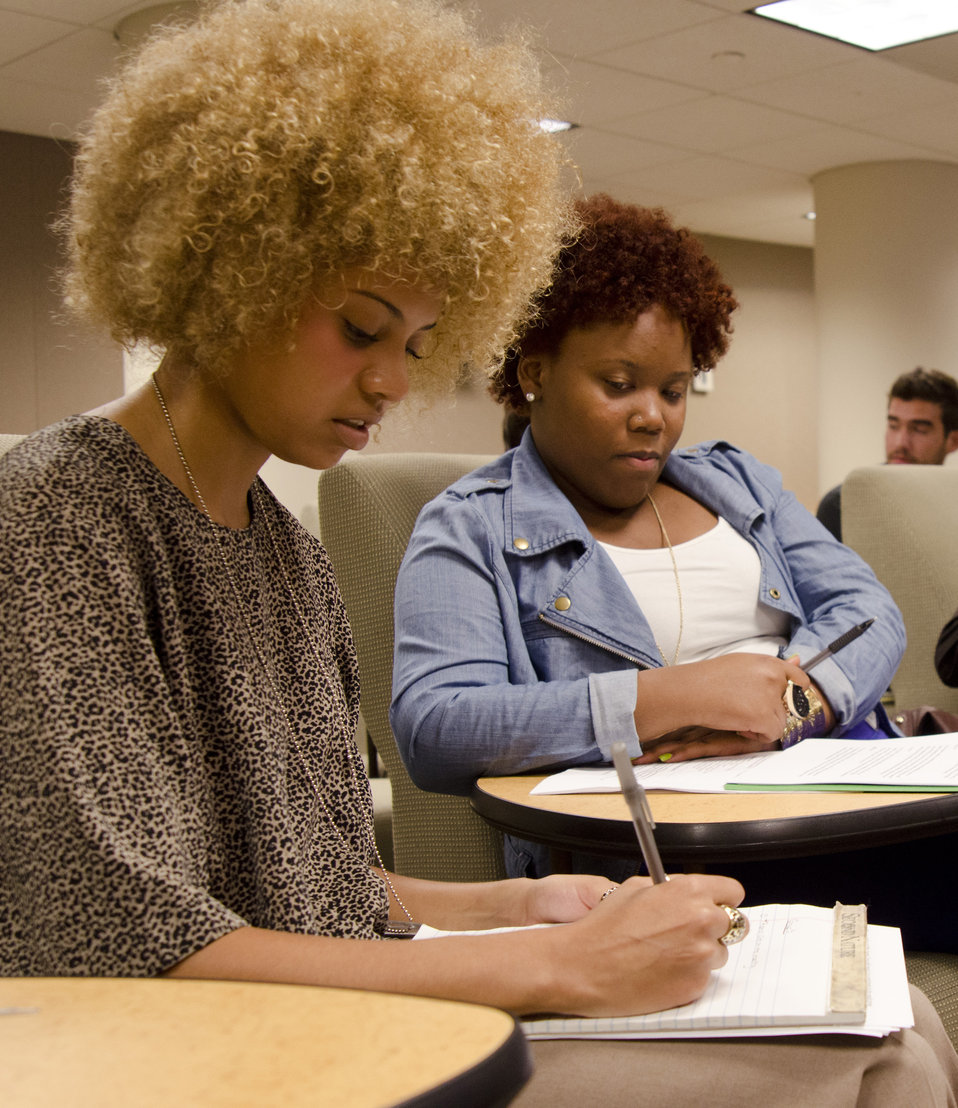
U.S. Department of Agriculture (USDA) Departmental Management (DM) intern Amber Mathews (left) and USDA National Institute of Food and Agriculture (NIFA) intern Montia Medley take notes during a session at the USDA Internship Program Listening Session held in USDA’s South Building in Washington, D.C. on Monday, August 7, 2012. The purpose of the USDA Internship Program Listening Session is to provide interns with a forum to express their views about their experiences as a USDA intern. These young people will be among the most promising future USDA leaders and participate in an individual discussion and group session that will develop leadership skills.